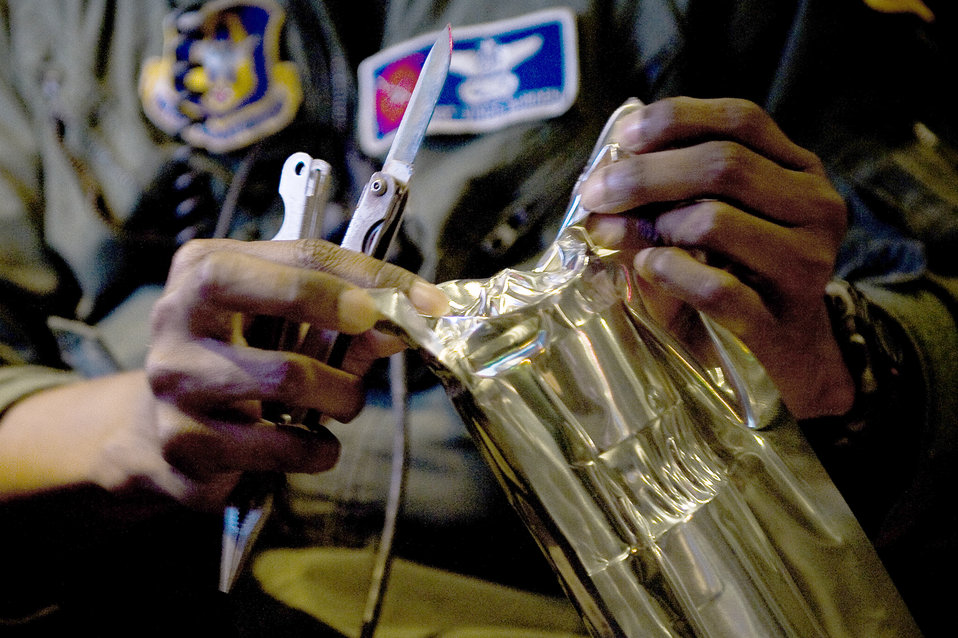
Hurricane hunters on Igor

Master Sgt. Vince Burden annotates the serial number of a dropsonde onboard a WC-130J Hercules over the Atlantic Ocean, while collecting data on Hurricane Igor Sept. 17, 2010, in the Caribbean. The dropsonde is a GPS instrument equipped with a high frequency radio and other sensing devices that measures weather data and relays it back to the aircraft. Sergeant Burden is a loadmaster with the Air Force Reserve Command's 53rd Weather Reconnaissance Squadron at Keesler Air Force Base, Miss.